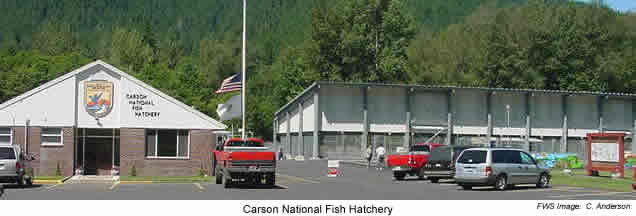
Offices at Carson NFH